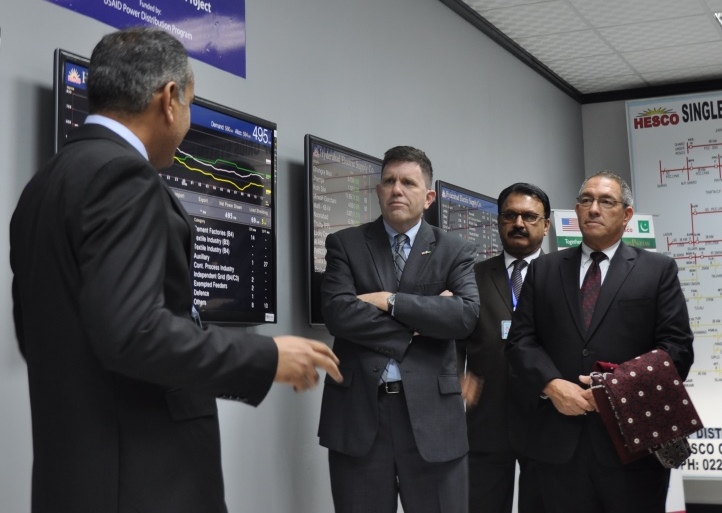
Hesco Opening